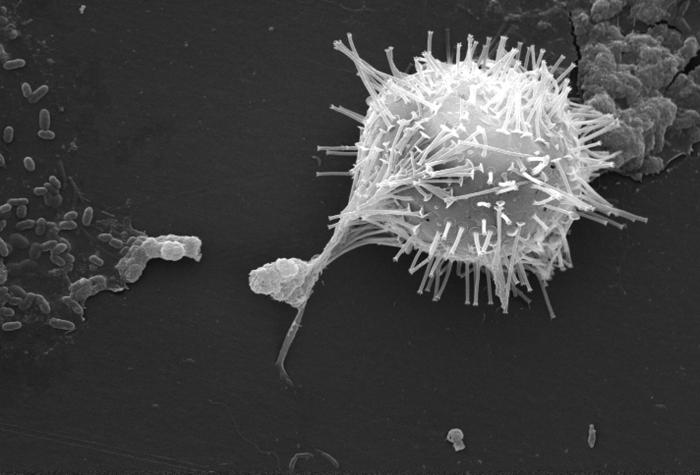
This scanning electron micrograph (SEM) of an untreated water specimen extracted from a wild stream mainly used to control flooding during inclement weather, revealed the presence of unidentified organisms, which included bacteria, protozoa, and algae. In this particular view, a microorganism is featured, the exterior of which is covered by numerous projections imparting an appearance of a sea urchin. This microscopic 'pin cushion' was teathered to its surroundings by a biofilm within which many bacteria, and amoeboid protozoa could be seen enmeshed as well. See PHIL 11683 and 11684, for subsequent views of this creature under successively greater magnifications. Also, see PHIL 11698 for a colorized version of this image.